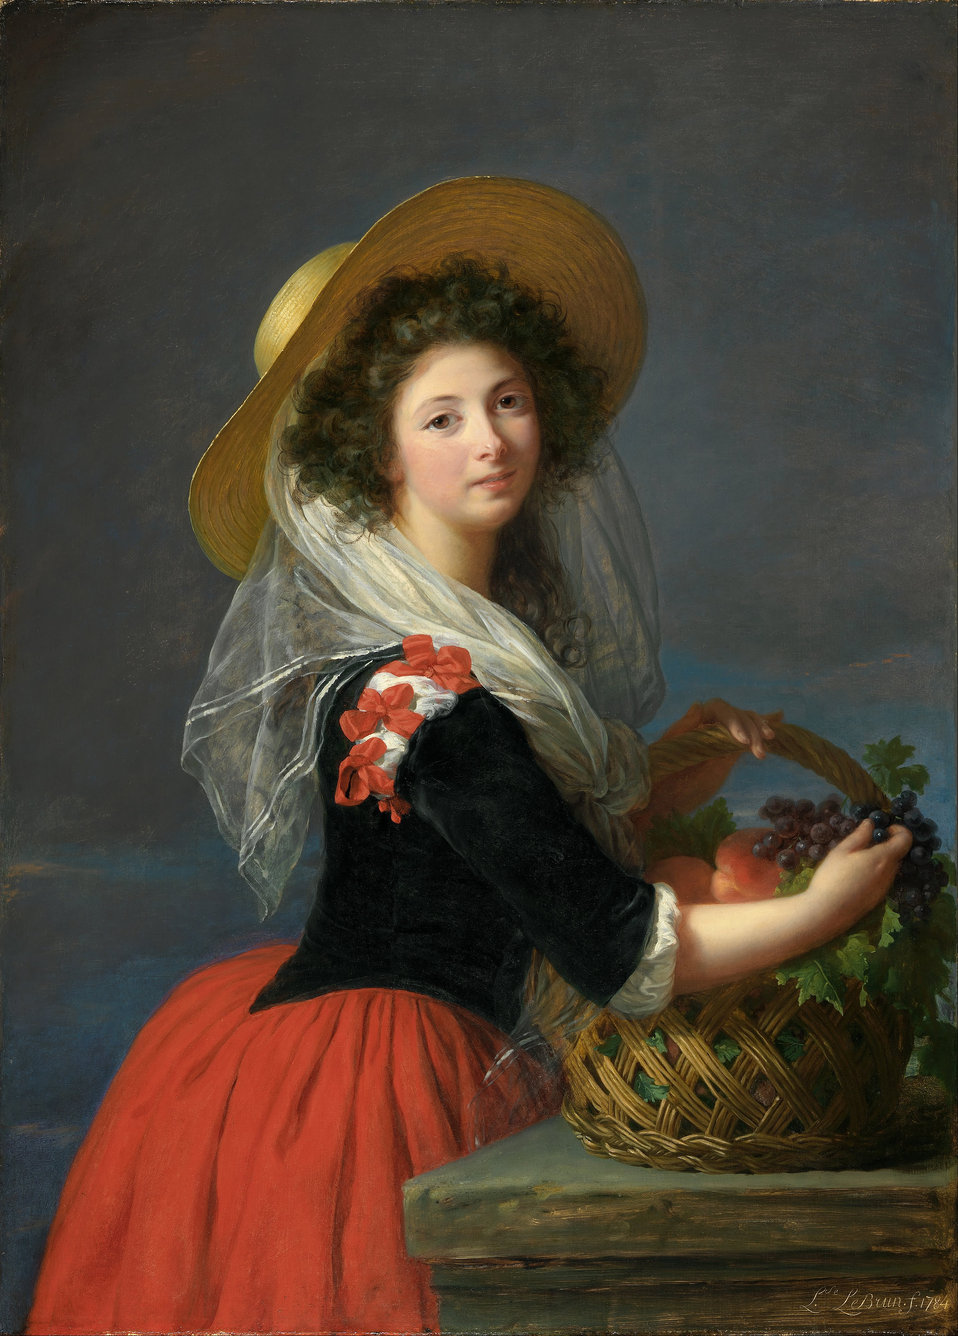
Elisabeth-Louise Vigée Le Brun - Portrait of Marie Gabrielle de Gramont, Duchesse de Caderousse - Google Art Project